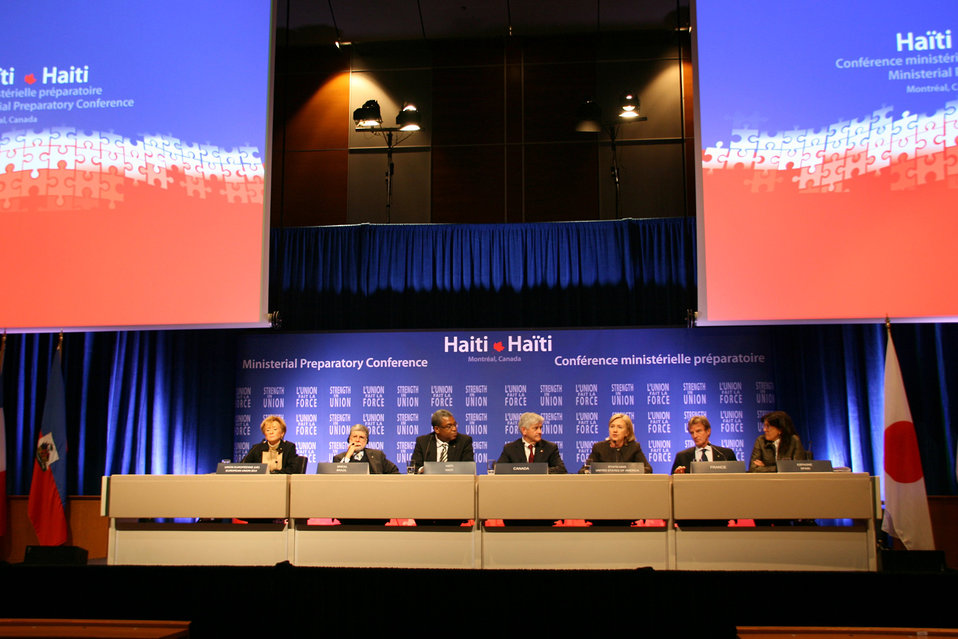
Secretary Clinton in Montreal

U.S. Secretary of State Hillary Rodham Clinton attends a press conference during the Haiti Ministerial Preparatory Conference in Montreal, Canada January 25, 2010.